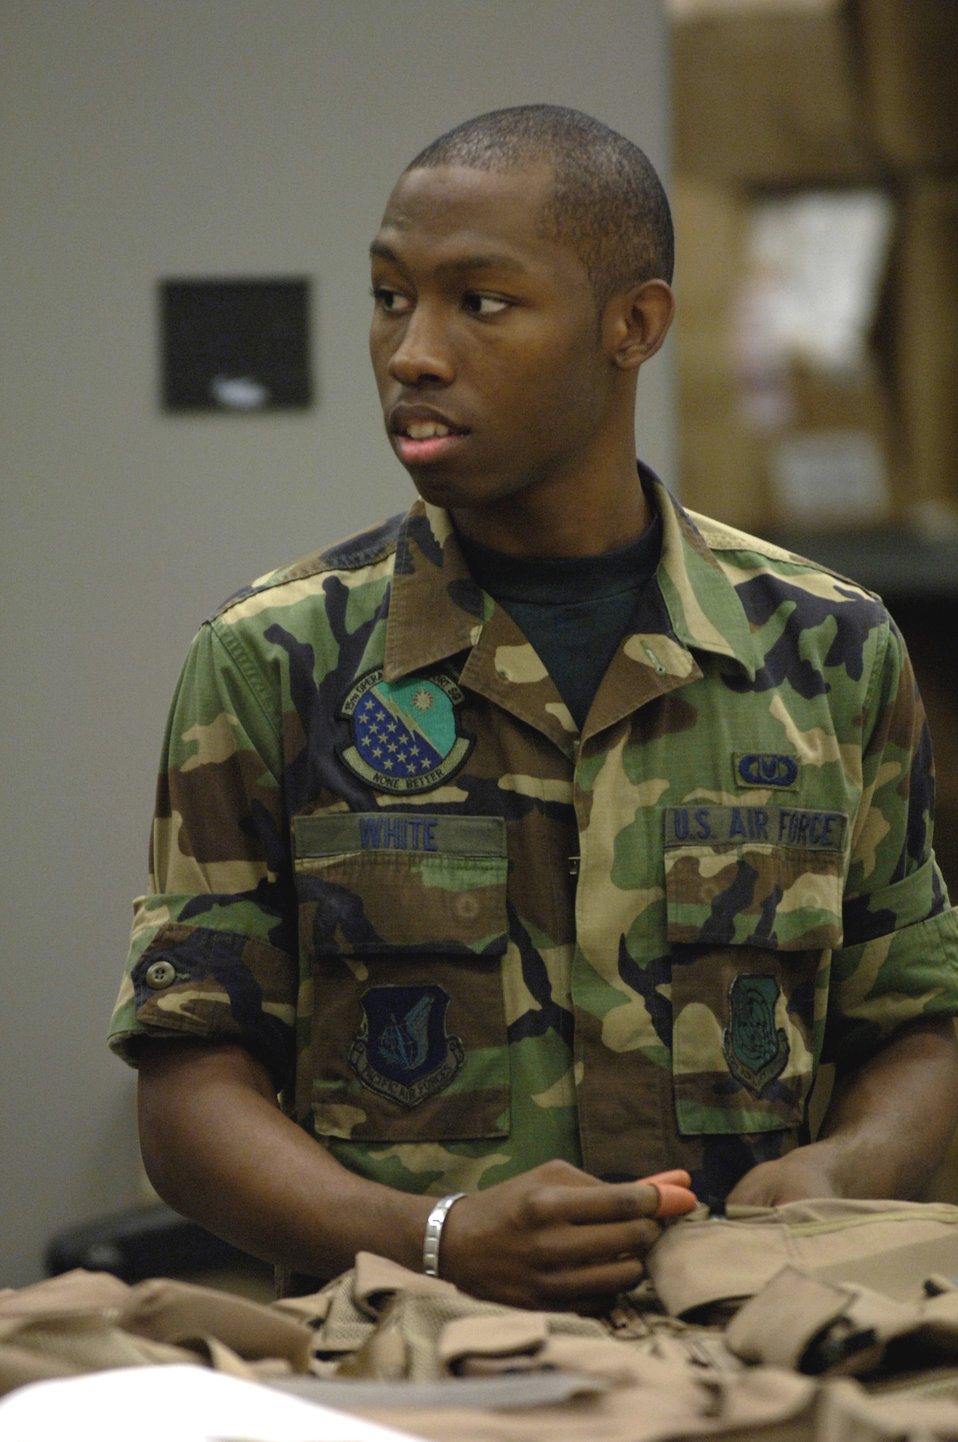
Life support

HICKAM AIR FORCE BASE, Hawaii (AFPN) -- Airman Basic Christian White sews down pockets on an air ace survival vest. The life support shop is a combination of Hawaii Air National Guard and active-duty Airmen who support the 15th Airlift Wing, 154th Wing and transient aircraft. Airman White is with the 15th Operations Support Squadron.